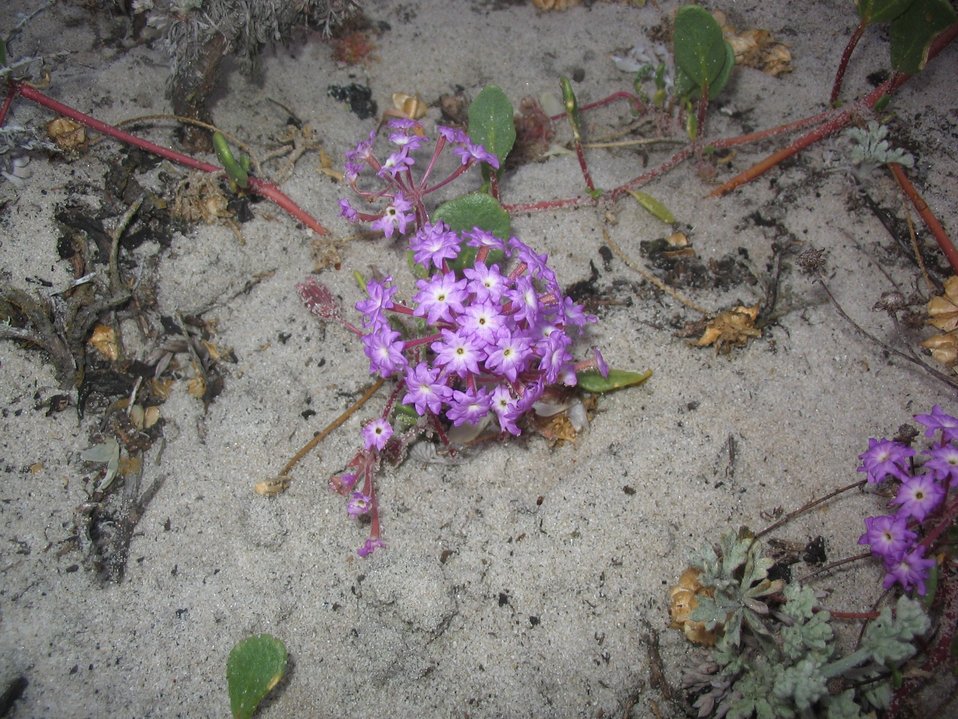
Lavendar sand verbena (Abronia umbellata)